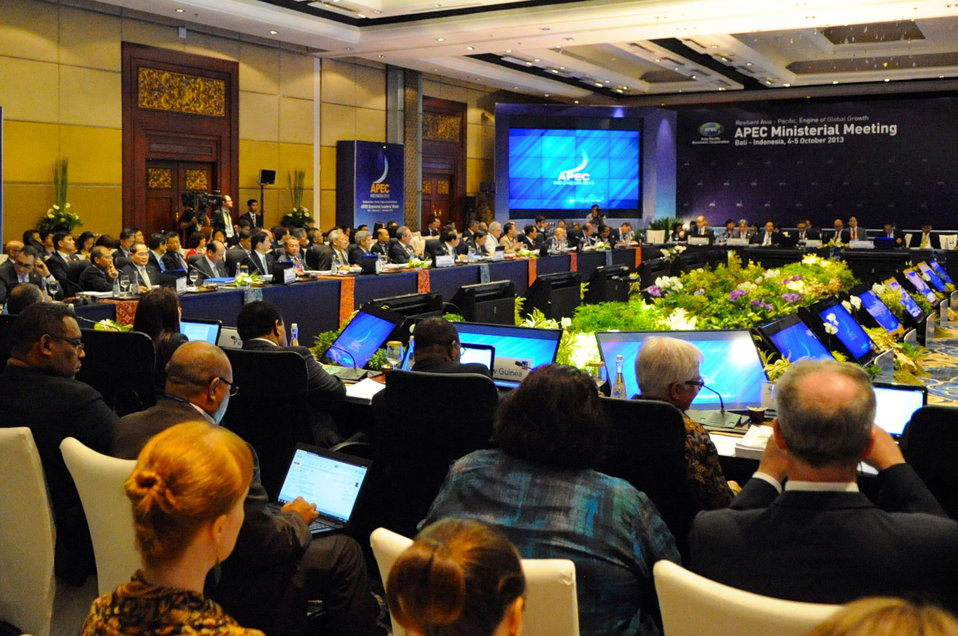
Secretary Kerry and U.S. Trade Represenative Froman Particpate in the Ministerial Meeting Opening Plenary Session

U.S. Secretary of State John Kerry and U.S. Trade Representative Michael Froman join their counterparts for a plenary session to open the 2013 APEC Ministerial Meeting in Bali, Indonesia, on October 4, 2013.